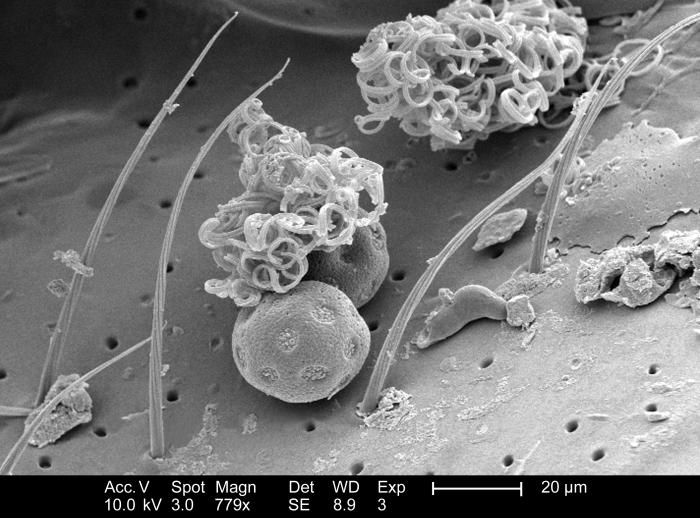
This scanning electron micrograph (SEM), magnified 779x, revealed the microscopic debris that was attached to the exoskeletal surface of an unidentified insect. These particulates were predominantly made up of vegetative matter such as pollen granules, and disintegrated plant tissues. Also note the few sensorial hairs in the field of view.